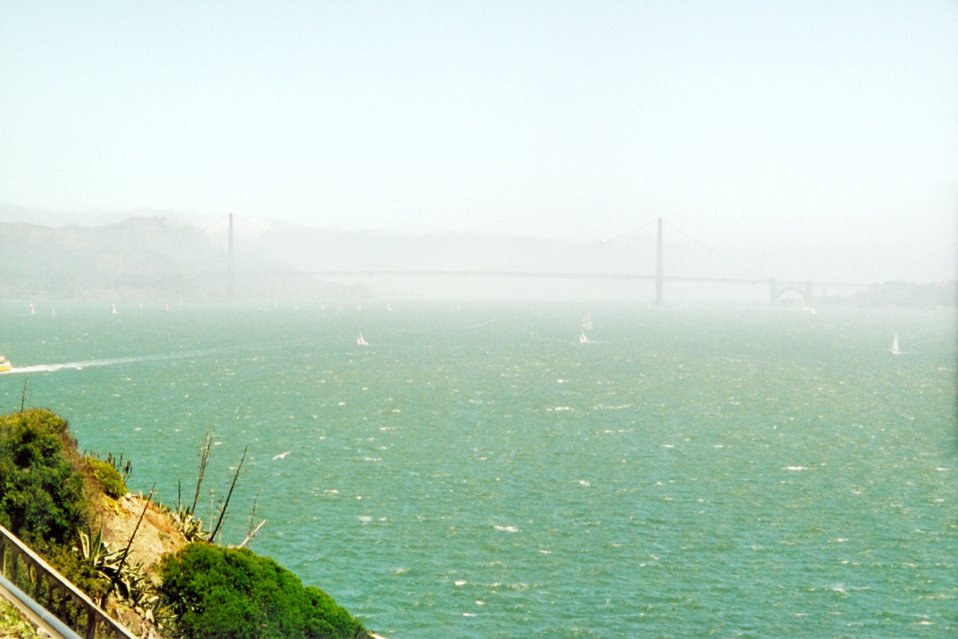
The Golden Gate Bridge on a hazy foggy afternoon. Sailboats in the distance are dwarfed by the bridge.